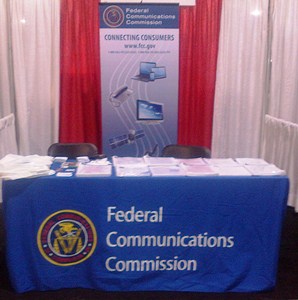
National Urban League Conference 7-24-7-27-2013

Federal Communications Commission booth 810 during the 2013 National Urban League Conference in Philadelphia.